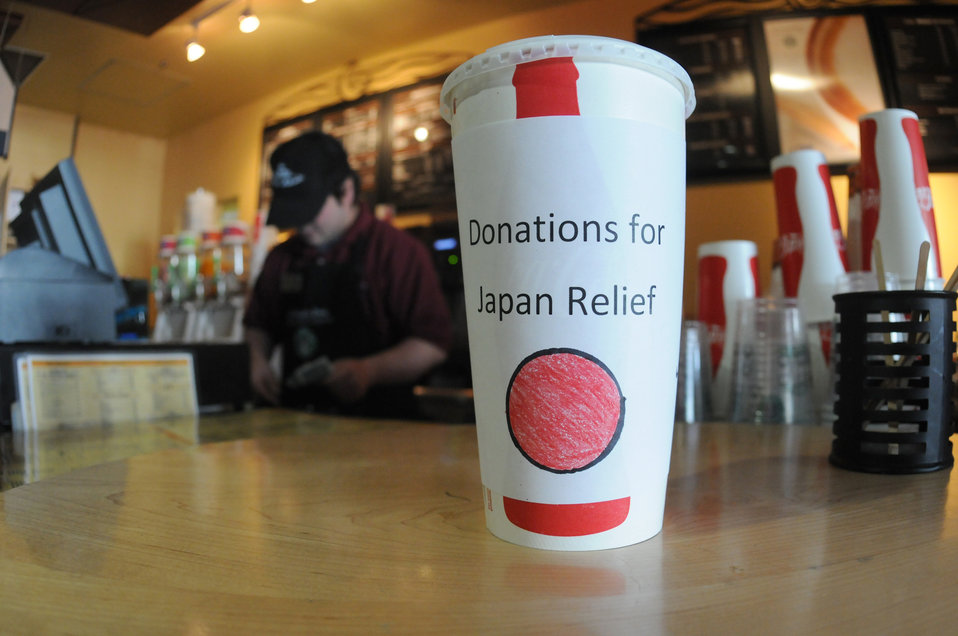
Misawa baristas

A cup displaying a representation of the Japanese sun and the words,